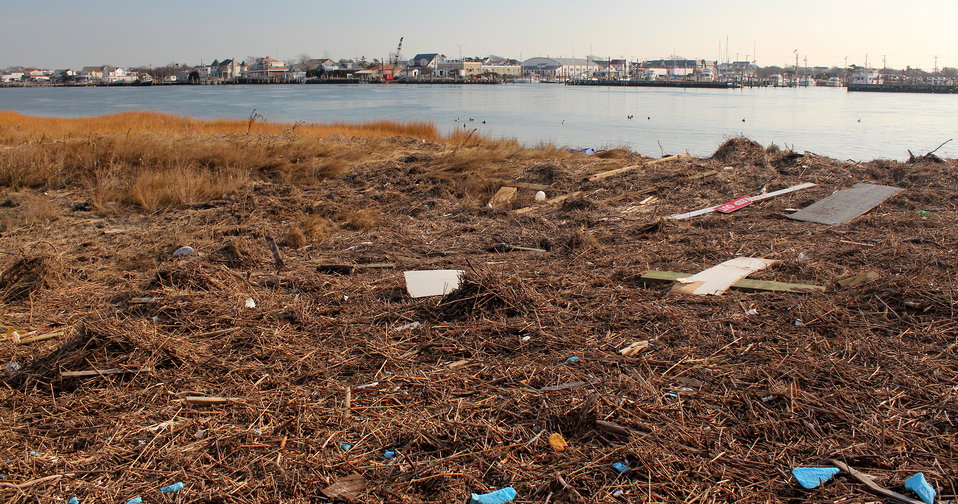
December 3, 2012 – Debris line across the way from Point Lookout, Lido Beach, NY

Walking the shoreline a significant debris line covers the marsh. Plastic, foam, nets, bags cover the area in addition to the more unusual litter such as toys, photographs, even holiday decorations.